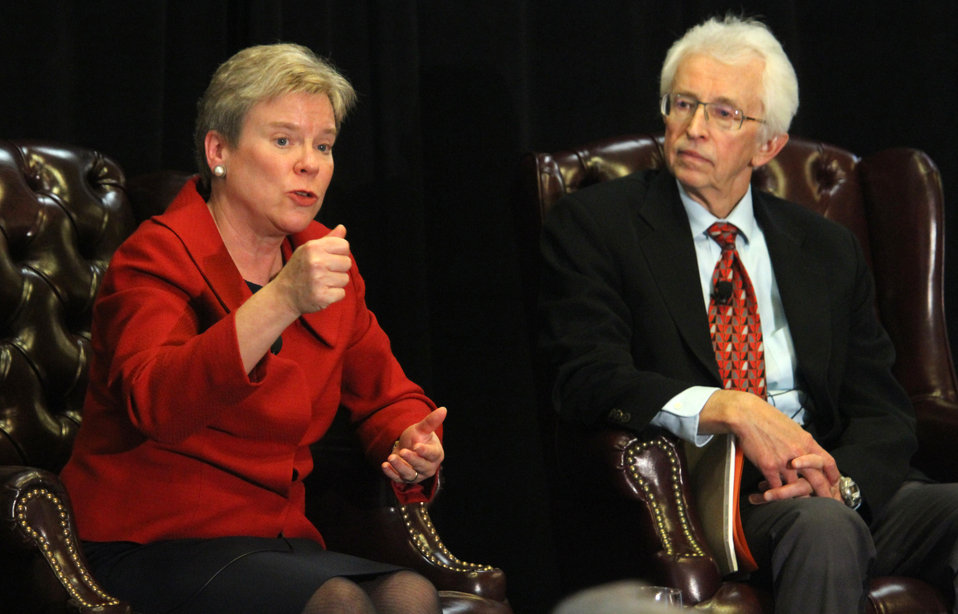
Assistant Secretary Gottemoeller and Dr. Hecker Discuss Arms Control

Assistant Secretary of State for Arms Control, Verification and Compliance Rose Gottemoeller speaks with Dr. Siegfried S. Hecker about 'Arms Control in the Information Age' at the Center for International Security and Cooperation (CISAC) in Stanford, California, on October 27, 2011.